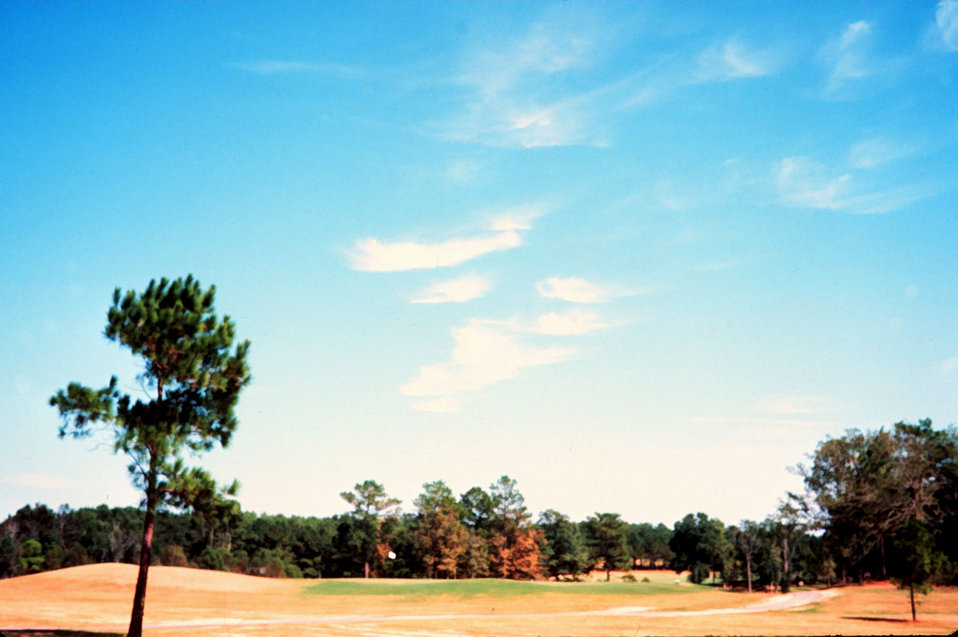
Cirrus with hooks or tufts